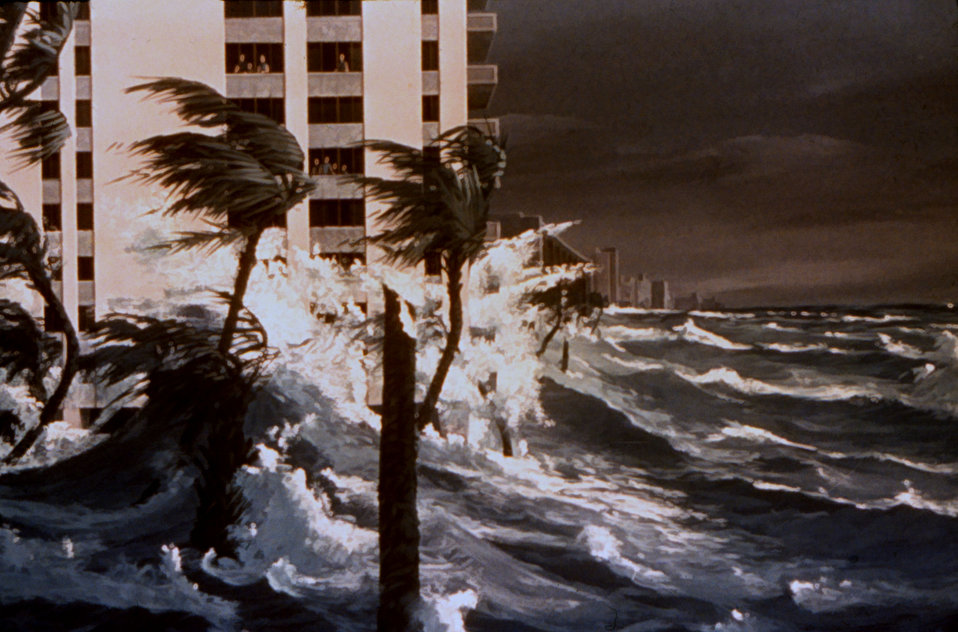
Artist's rendition of 'safe' people in high-rise observing storm surge